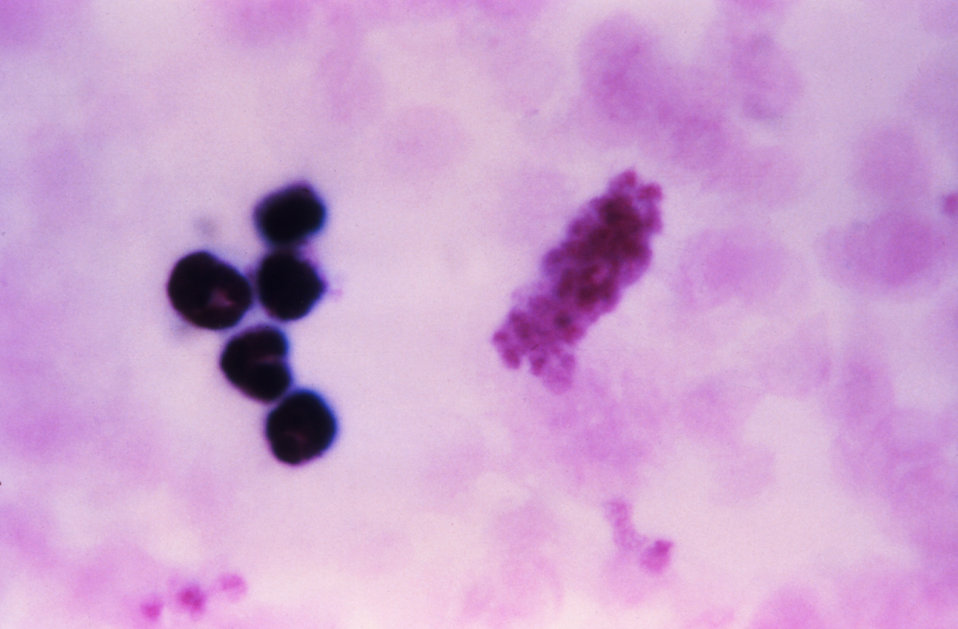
This thick film Giemsa stained micrograph reveals both P. malariae organisms (Lt), and a platelet stack (Rt).